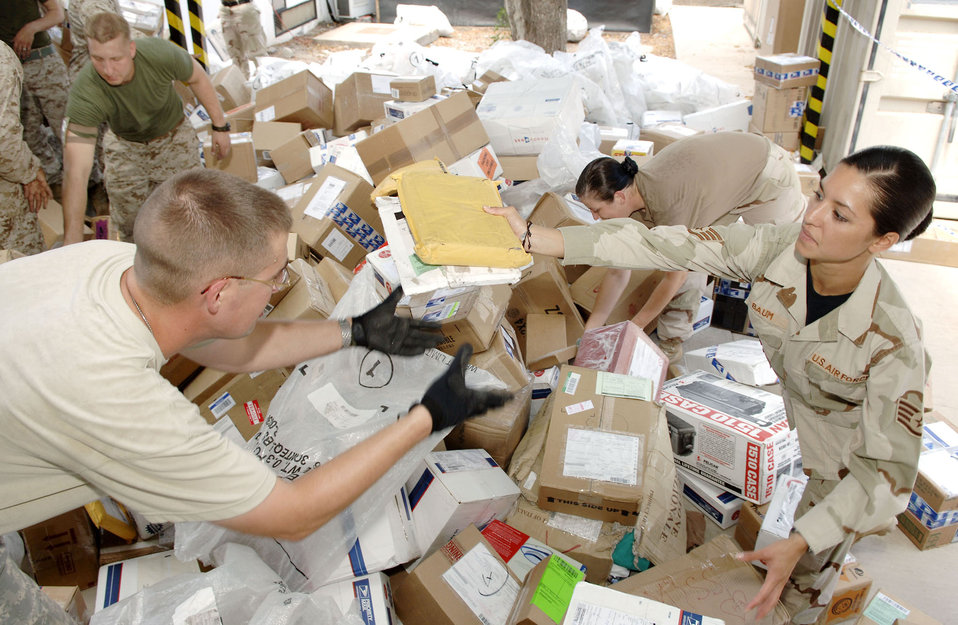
JTF Horn of Africa

Staff Sgt. Beatriz Baum hands packages to Army Spc. Jay Hohman for sorting at the postal center at Camp Lemonier, Djibouti. The postal center is the central processing point for all mail and packages slated for service members supporting Joint Task Force Horn of Africa.